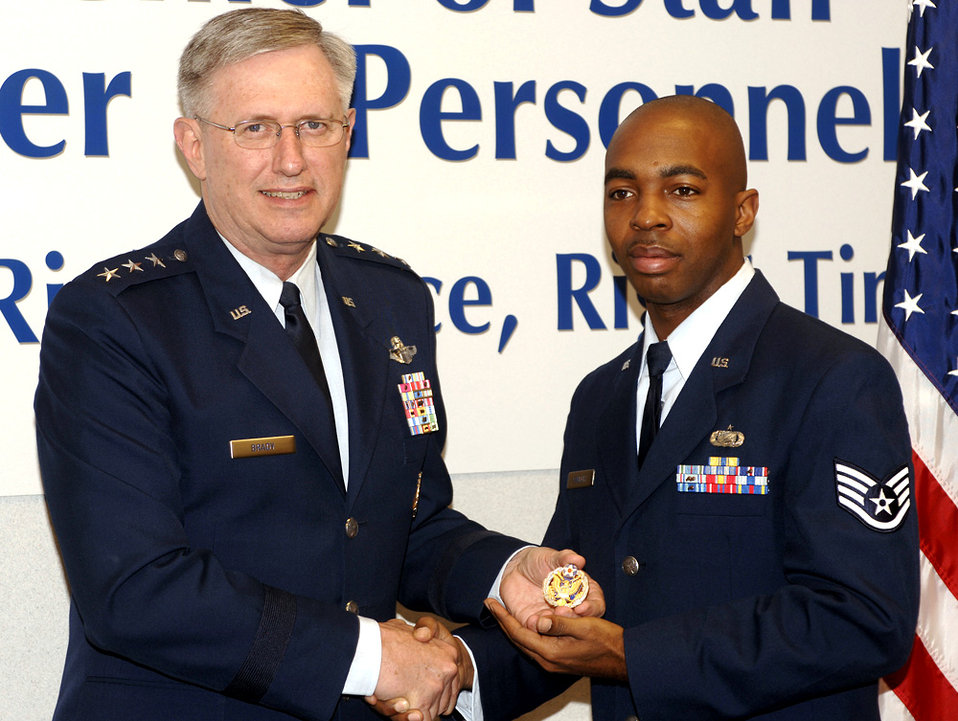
Air Staff badge debuts at Pentagon ceremony

Lt. Gen. Roger Brady, deputy chief of staff for manpower and personnel, presents the new Headquarters Air Force badge to Staff Sgt. Chris Kennerly during a ceremony marking the official release of the badge on Friday, May 19, 2006, in the Pentagon. Airmen assigned to the Pentagon will have the option to wear the new badge. The basis for the badge is Air Force heritage and the design incorporates many elements from the Department of the Air Force Seal. Air Force Chief of Staff Gen. T. Michael Moseley approved the design and development of the badge in September.